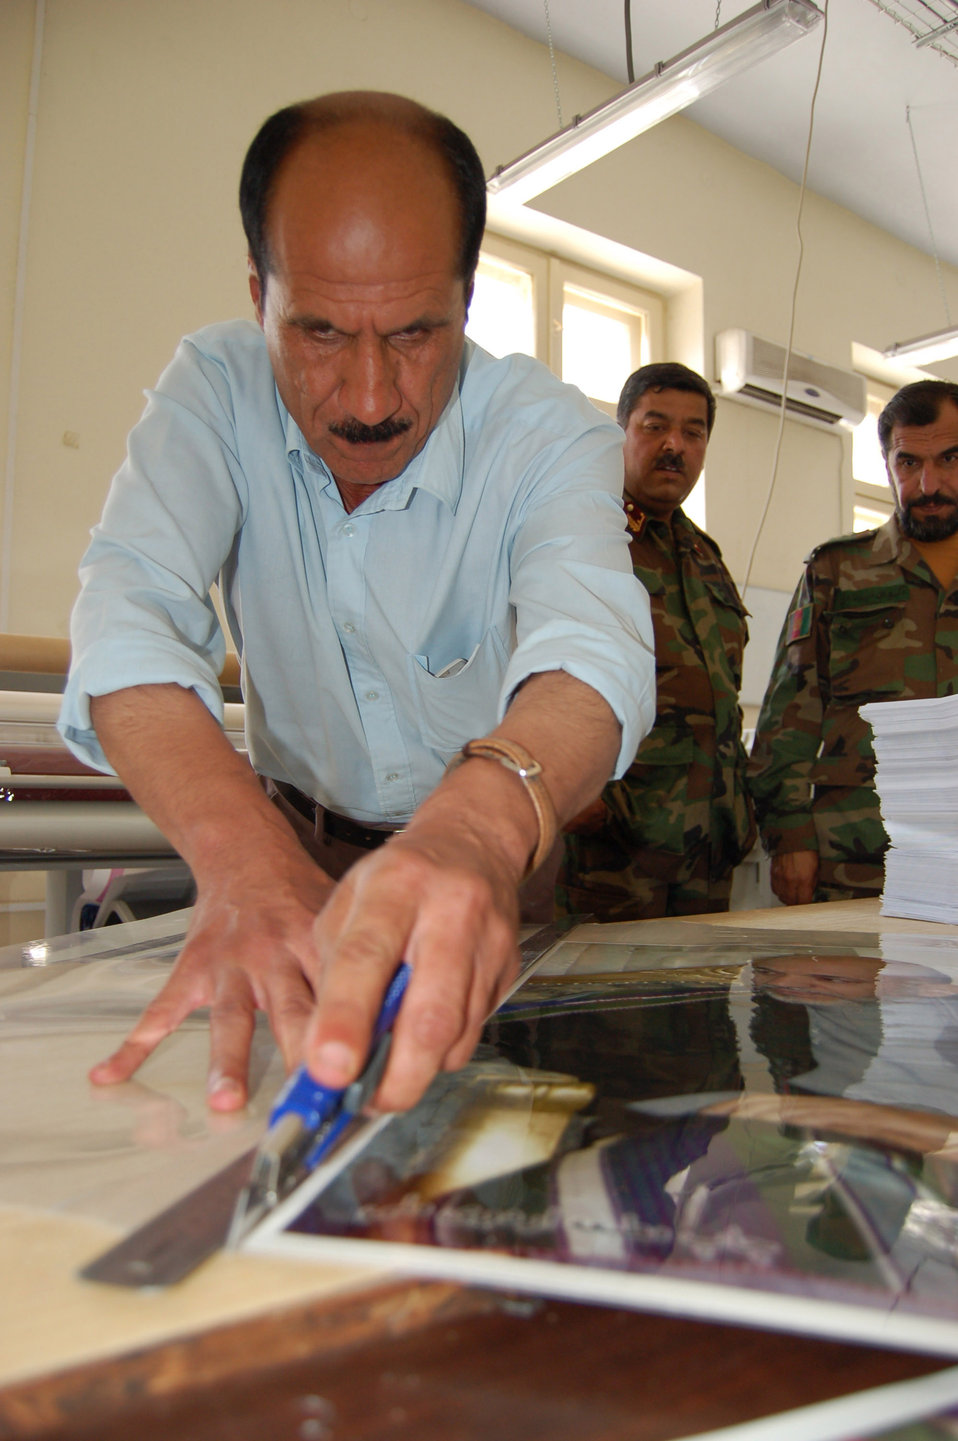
ANA print plant supports mission, training

An Afghan National Army civilian cuts the laminate on a poster at the ANA print plant in Kabul, Afghanistan. During an average week, the plant produces more than 75,000 products used for training, recruitment and logistical support.